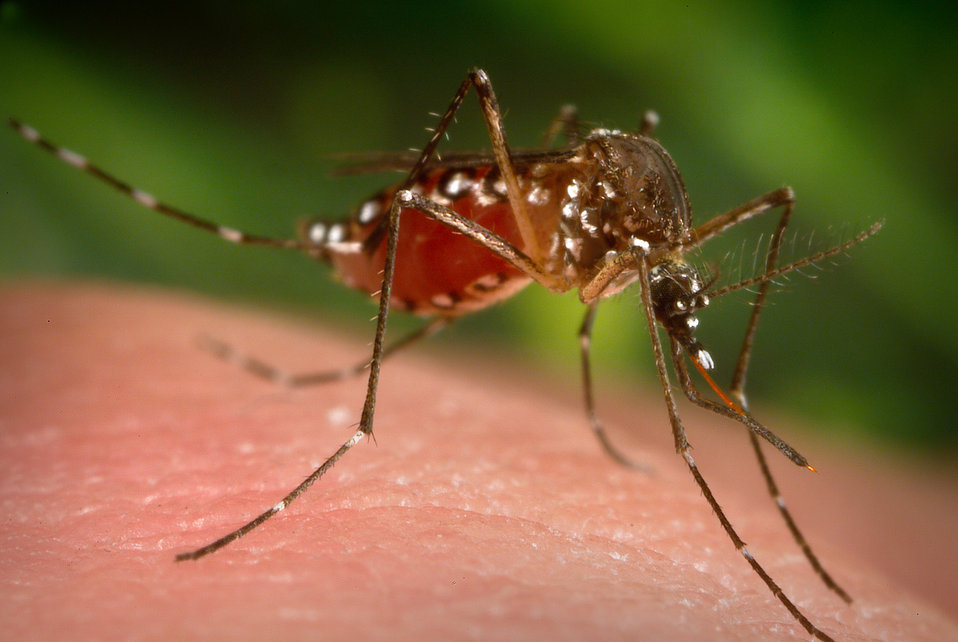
This 2006 photograph depicted a female Aedes aegypti mosquito as she was in the process of flying away from her host's skin surface, after having had obtained her fill of blood. Normally, blood is obtained from an unsuspecting host, but in this case, the CDC's biomedical photographer, James Gathany, had volunteered his own hand in order to entice the insect to alight, and feed. Note that the sharply pointed orange-colored "fascicle", was once again ensheathed within the insect's proboscis by the outer soft labium. Its blood meal can be seen inside its distended abdomen, evidenced by the red coloration visible through the stretched, transparent exoskeletal abdominal exterior. See PHIL # #8924, for this mosquito's appearance before the ingestion of its blood meal.